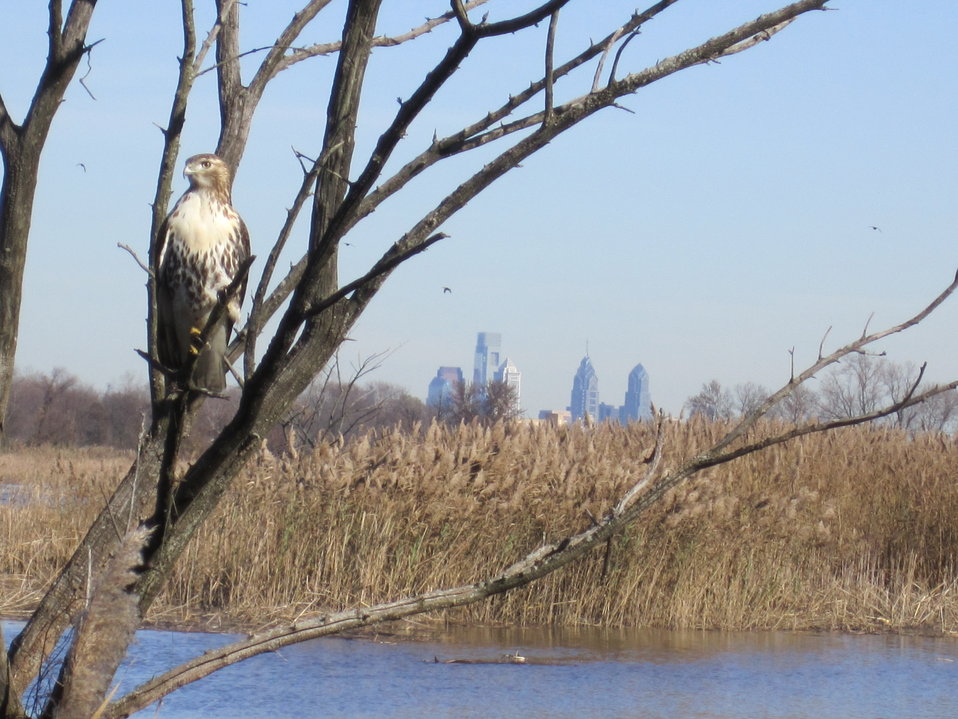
A hawk at John Heinz Refuge

A hawk perches at John Heinz National Wildlife Refuge at Tinicum in Philadelphia. (Derik Pinsonneault, USFWS)